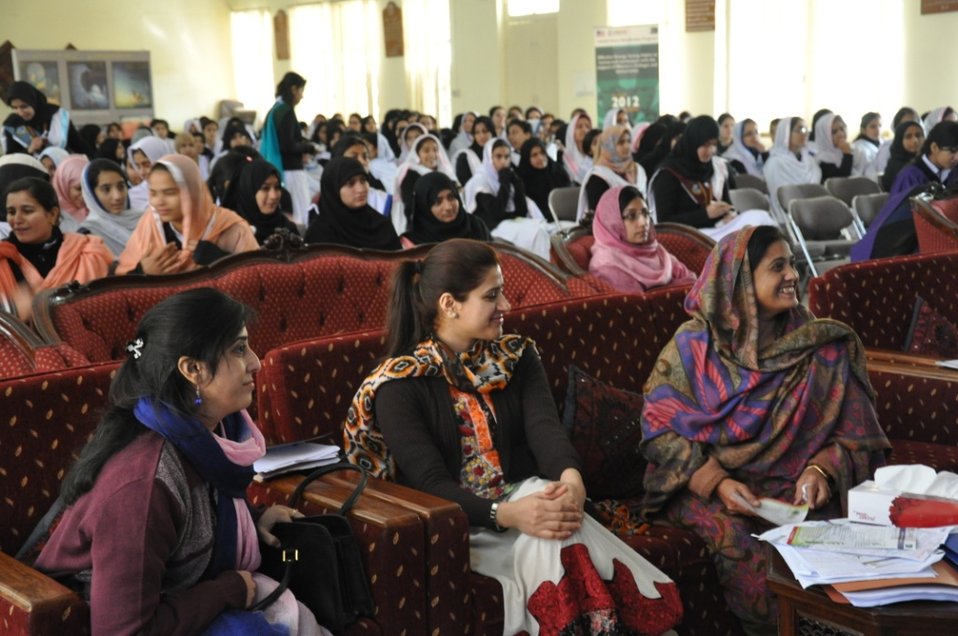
Effective Energy Saving Habits Campaign

Islamabad, January 31, 2012 - The USAID Power Distribution Program, under its Gender Strategy, held an informative talk at Islamabad Model College for Girls, F-6/2 and F-7/2, with the support of female representatives from IESCO. The agenda of the talk was to:
• Inform students about the USAID Power Distribution Program and the role of DISOCs in Pakistan.
• Educate students and teachers about the effective energy saving methods they can apply at homes, schools and work places.
• Enlighten female students about their workplace rights and inform them about various employment opportunities in the power sector.